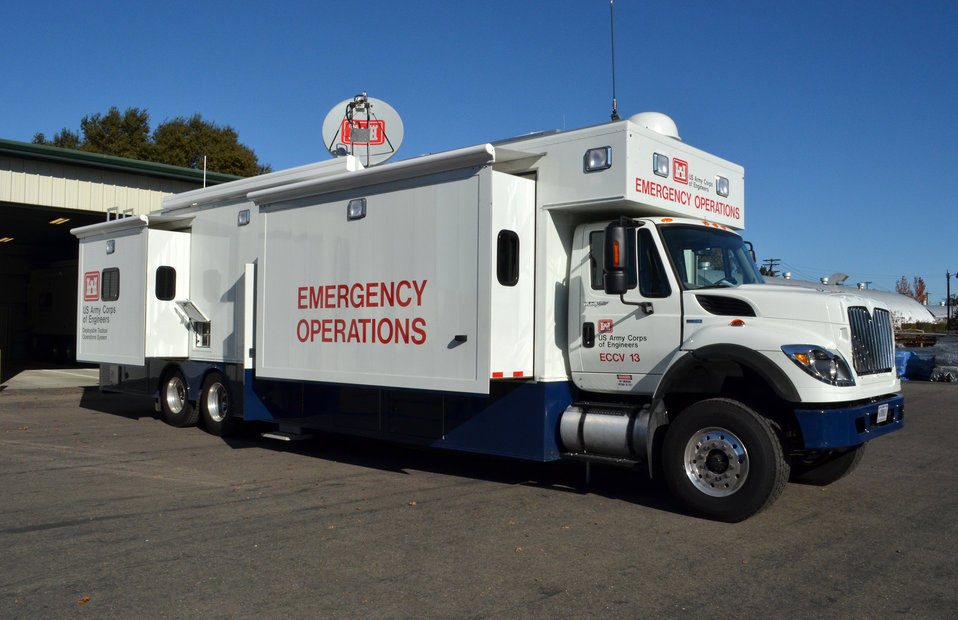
Corps trains on new emergency operations vehicles

One of three new emergency command and control vehicle sits at a U.S. Army Corps of Engineers Sacramento District facility in West Sacramento, Calif., Nov. 30, 2011. All three ECCVs were received at the Sacramento District in early November 2011. The vehicles are part of the Corps’ deployable tactical operations system, designed to provide mobile command and communications centers that support the quick ramp-up of initial emergency response missions for the Corps.